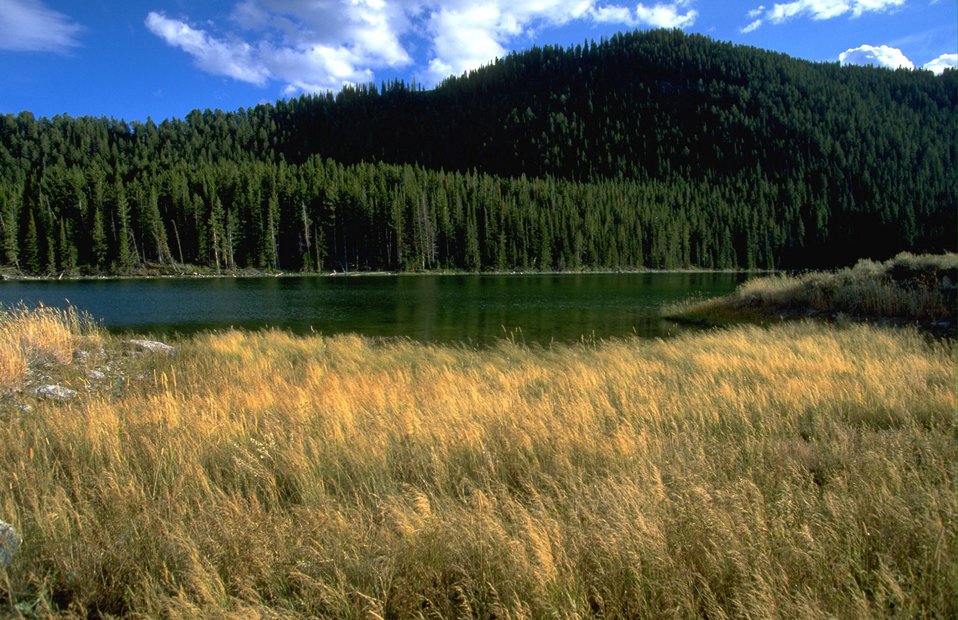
Grass blowing in the wind next to Axolotl Lake